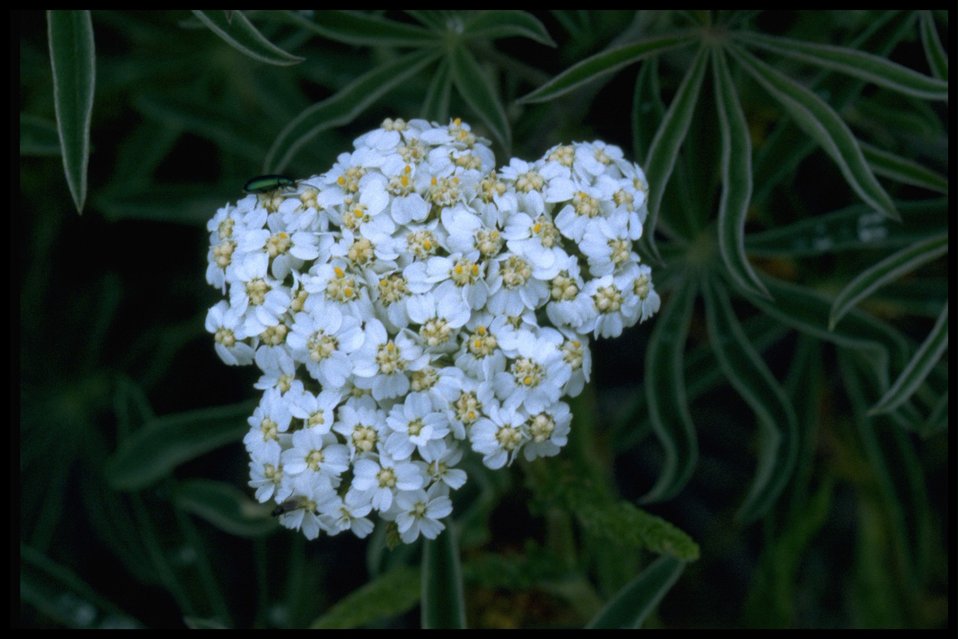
Closeup shot of Yarrow wildflower (Achillea millifolium) and Lupine leaves.